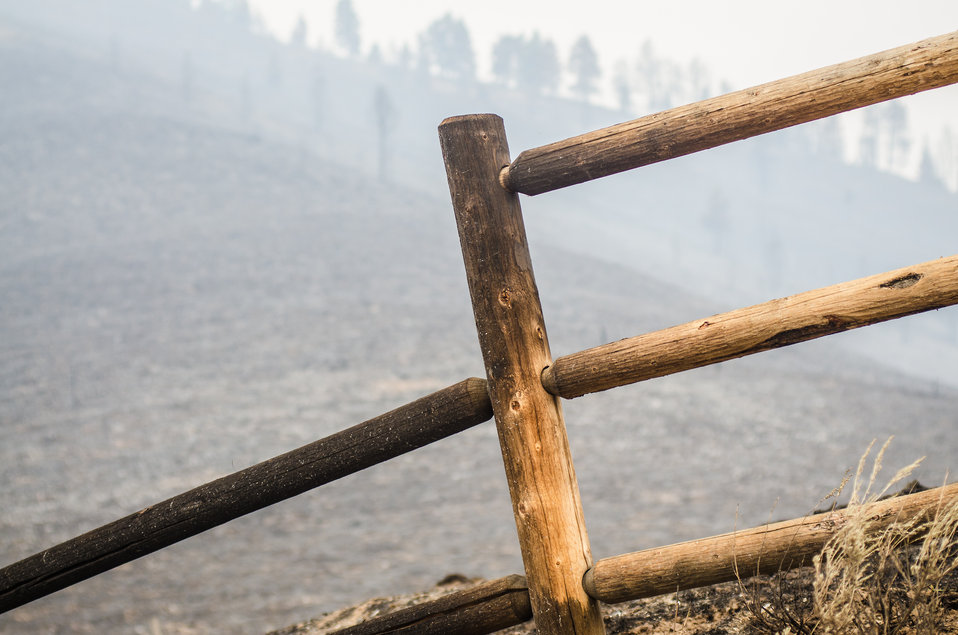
Thanks to the efforts of Wildland Firefighters, support crews and other first responders, homes and residential communities were (with few exception) saved from major damage, from the Beaver Creek Fire, near Hailey, ID, in the interface of U.S. Department of Agriculture (USDA) Forest Service (FS) and Sawtooth National Forest and Bureau of Land Management (BLM) lands, on Wednesday, Aug 21, 2013. In this community, major sections of hillside were charred, some suffered burnt trees, grass lands and fences.